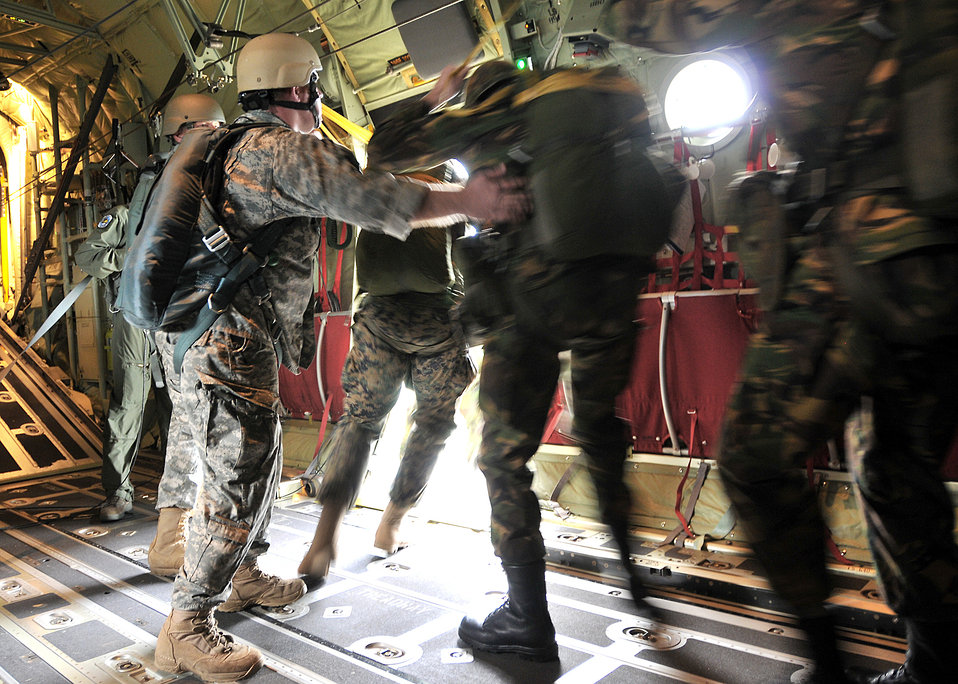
Operation Market Garden

Paratroopers from five nations jump out of a C-130J Super Hercules assigned to the 37th Airlift Squadron, Ramstein Air Base, Germany Sept. 18, 2010, in Ginkelese Heide, Holland. Approximately 700 Dutch, German, British and American paratroopers participated in the event as part of a ceremony commemorating the 66th anniversary of Operation Market Garden. The operation was the largest airborne assault of World War II Sept. 14 to 20, 1944 in the Netherlands.